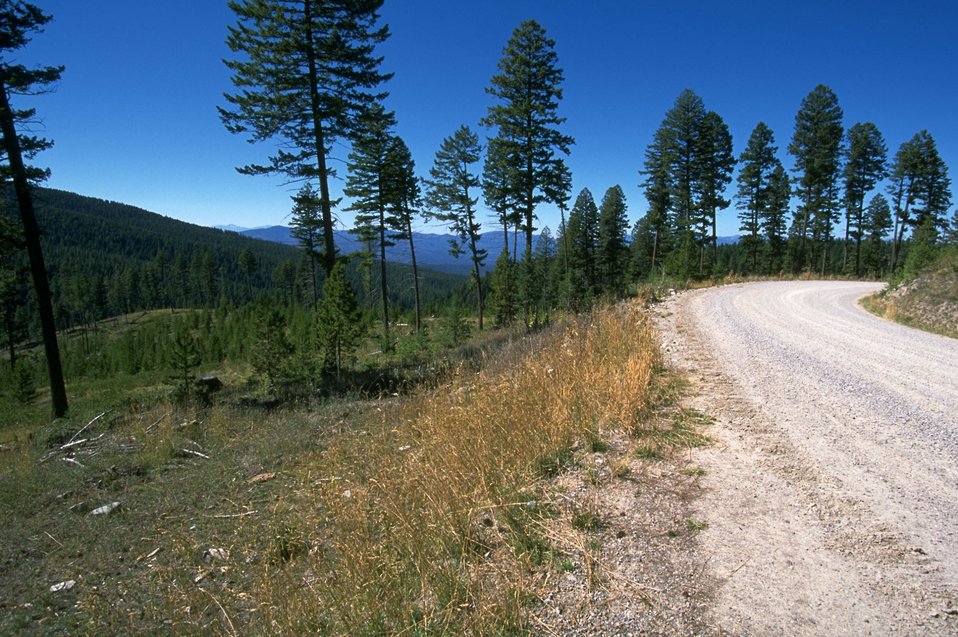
Timber harvest along Garnet Back Counry Byway